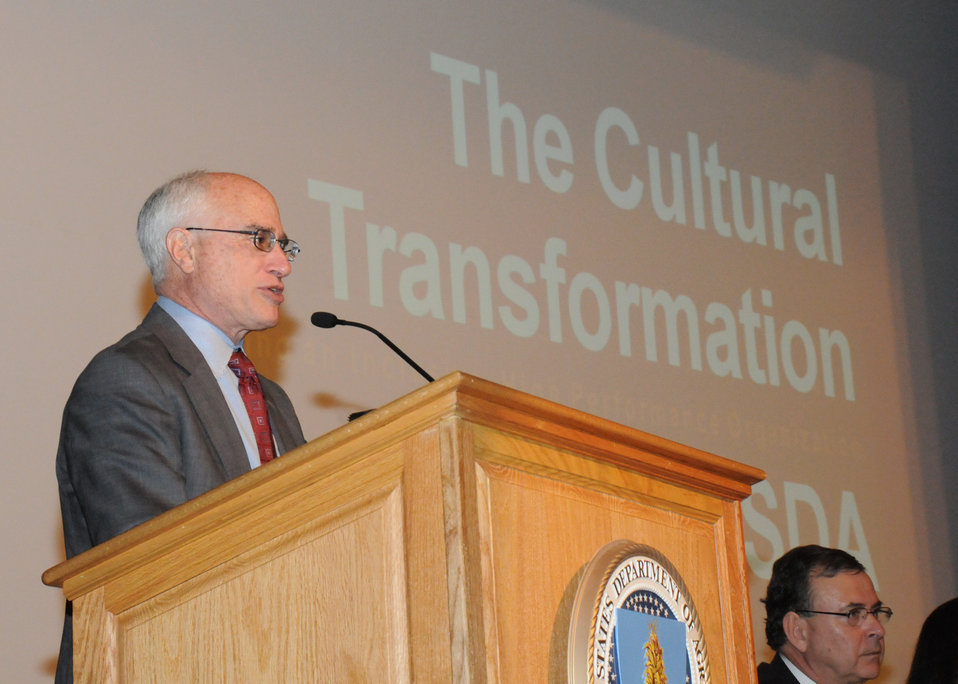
Under Secretary for Natural Resources and Environment Harris Sherman makes opening remarks at the last in a series of six employee listening sessions on the Cultural Transformation of the United States Department of Agriculture (USDA). The session was held on the campus of the University of Massachusetts in Amherst, MA, on Wednesday, May 5, 2010. USDA photo 10di1342-34